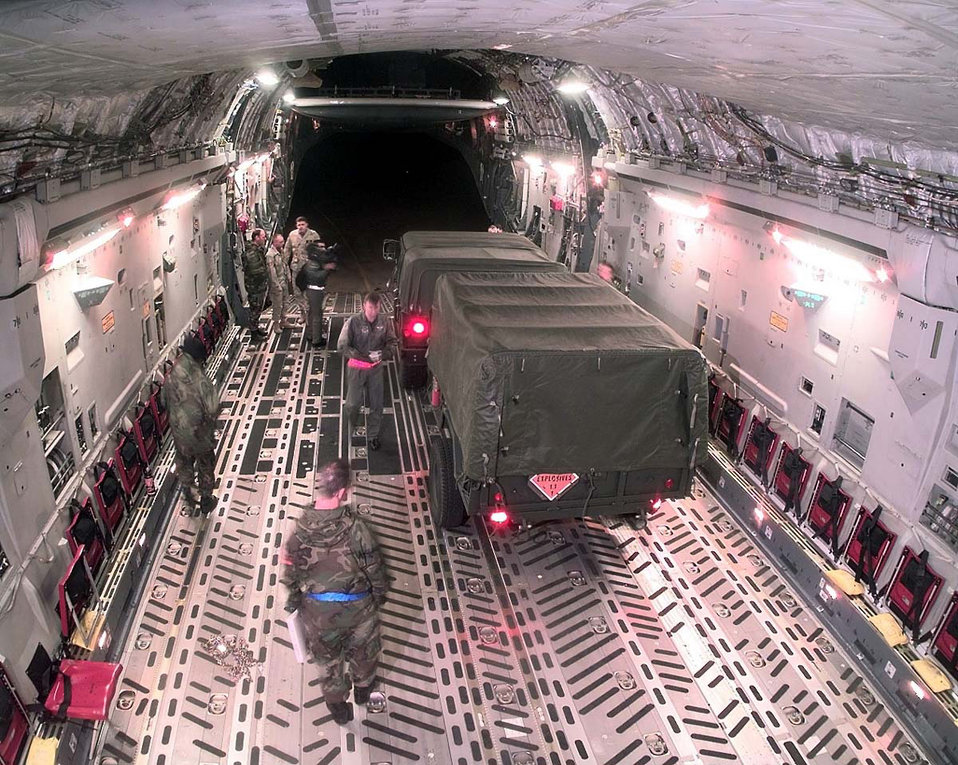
EOD on the move

OPERATION SOUTHERN WATCH -- An explosive ordnance disposal unit Humvee and cargo trailer is backed into the cargo compartment of a C-17A Globemaster III. This aircraft and crew took people and vehicles of the 437th Civil Engineering Squadron fire department and explosive ordnance disposal unit from their home at Charleston Air Force Base, S.C., to a deployed location in Southwest Asia, in support of Operation Southern Watch.